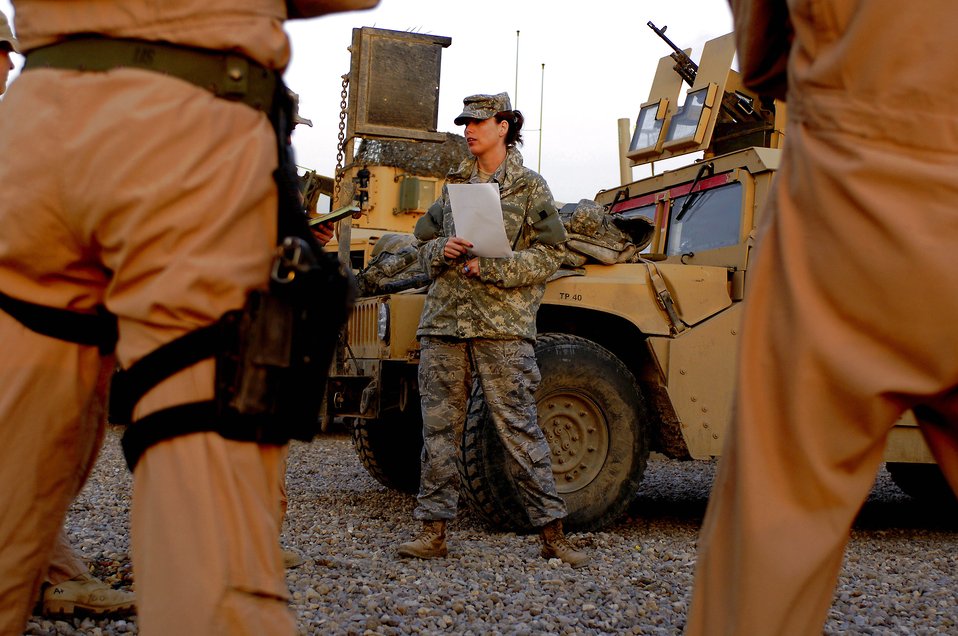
On patrol

Tech. Sgt. Traci Bauder gives the morning intelligence brief Mar. 3 prior to a patrol of the southwest area of Baghdad, Iraq. Sergeant Bauder is assigned to Detachment 3 of the 732nd Security Forces Squadron at Sather Air Base, Iraq and is deployed from the 377th Security Forces Squadron, Kirtland Air Force Base, N.M.